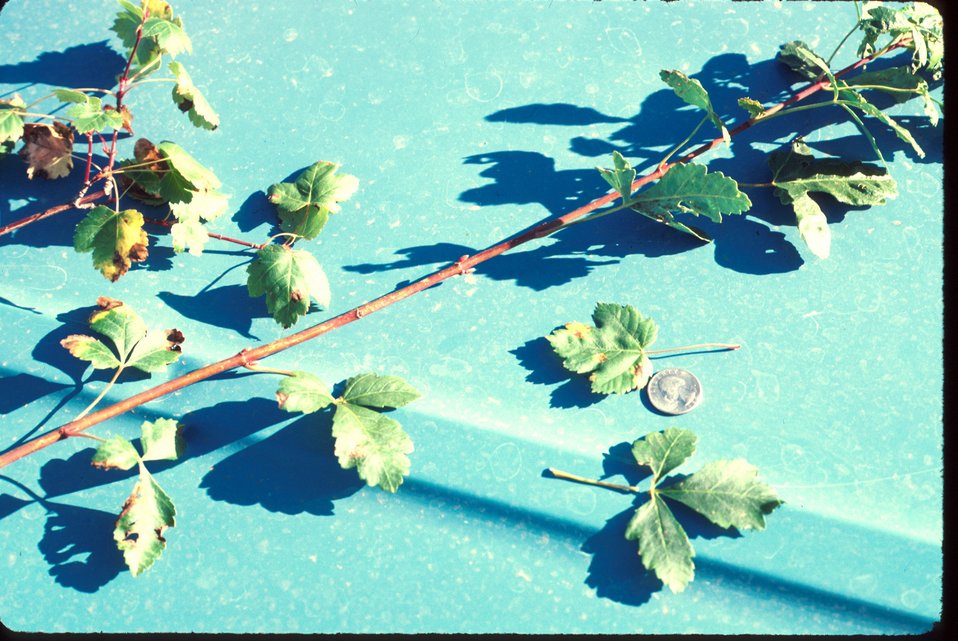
Rocky Mountain Maples Acer Glabrum Tree